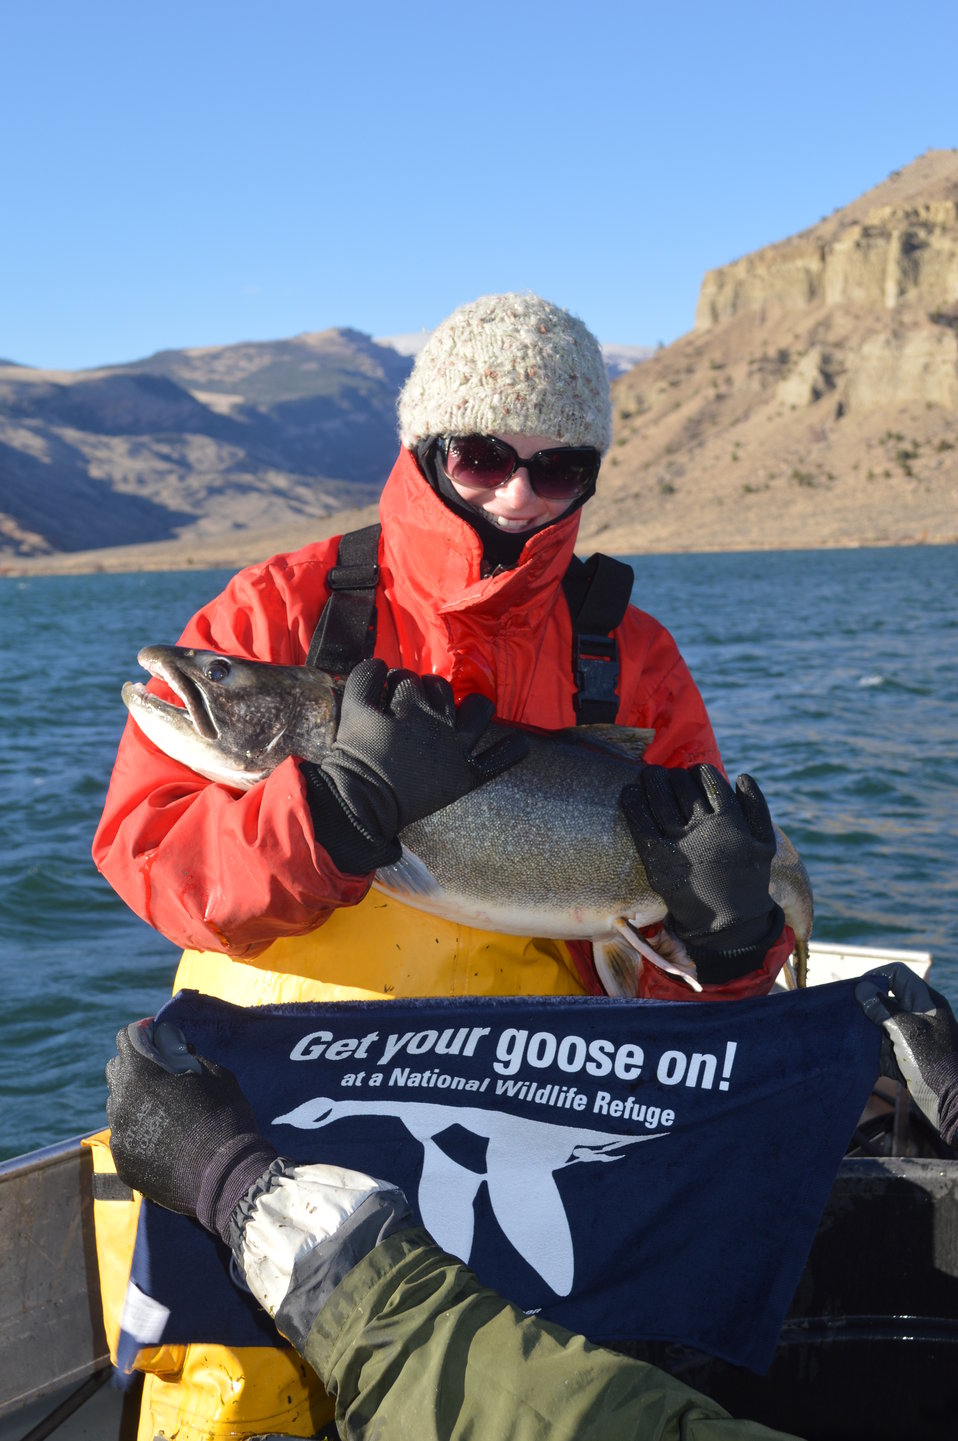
Get your Goose On! for Lake Trout!